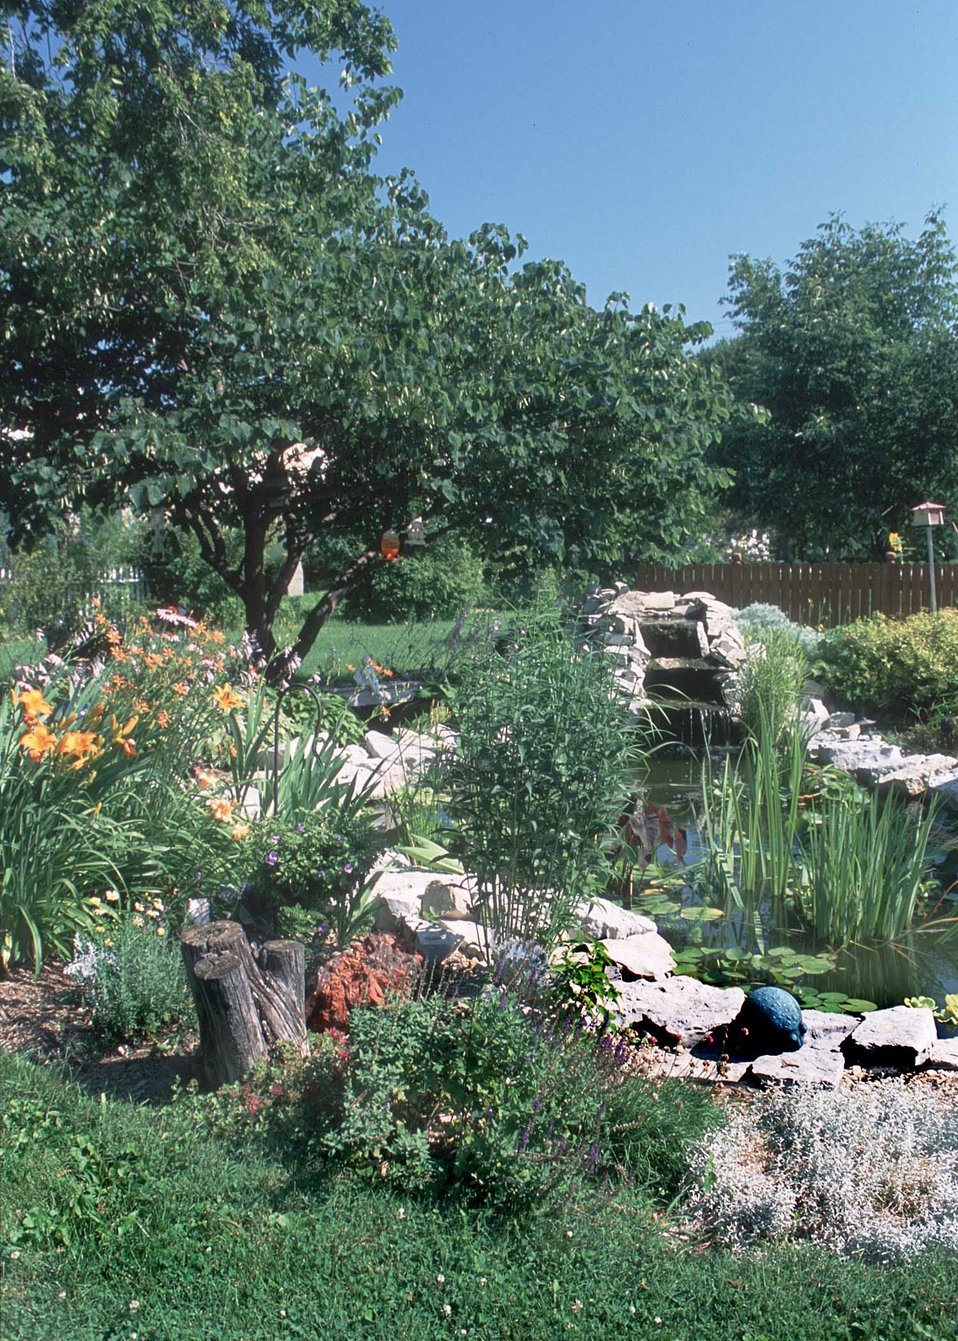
A variety of plants and a pond with circulating water are featured in a beautiful backyard in Keosauqua, Iowa.